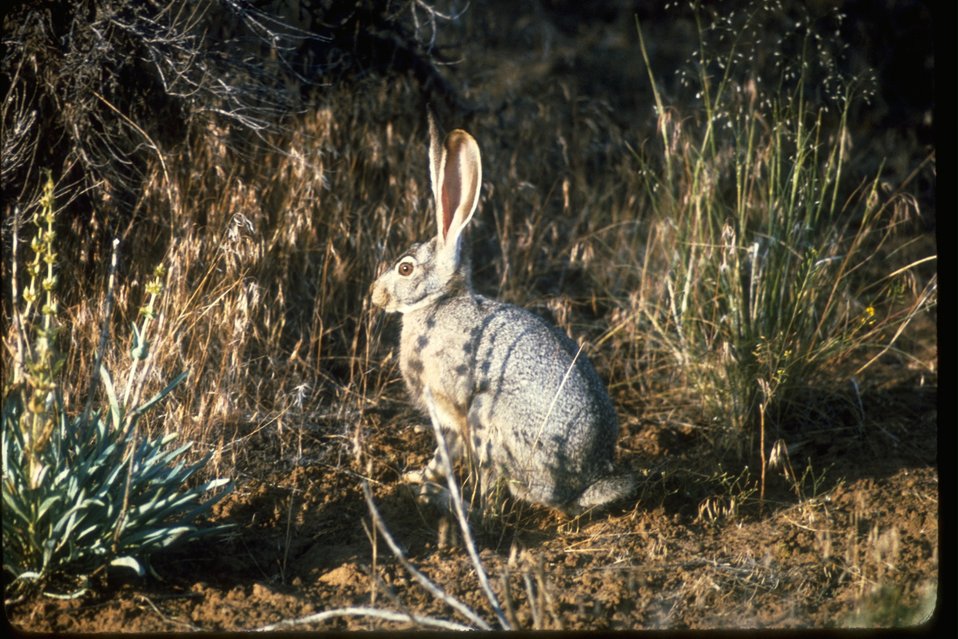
A Jackrabbit standing in dry grass.